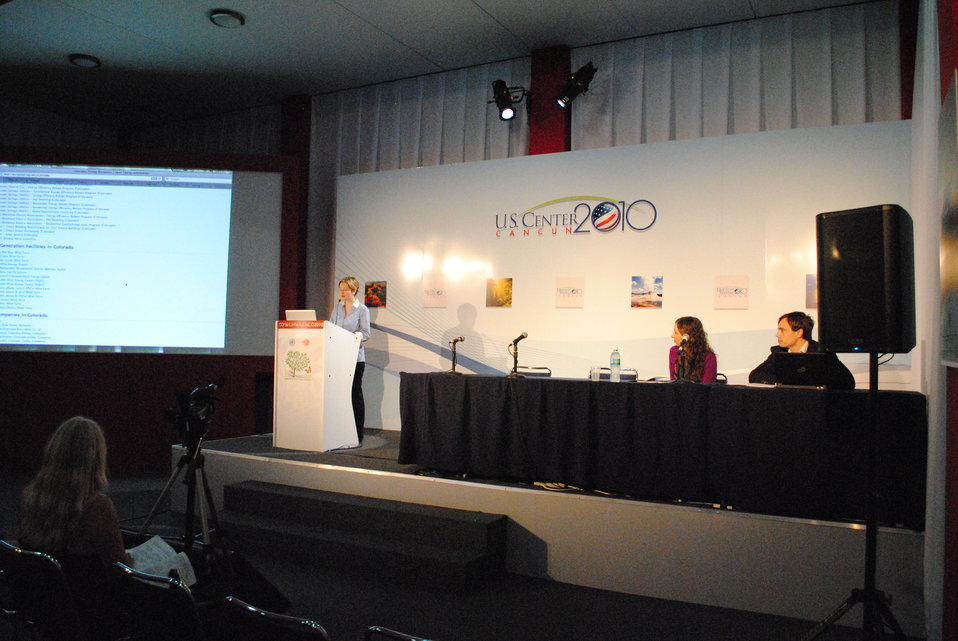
Jacqueline Cochran Showcases the Open Energy Information (OpenEI) Platform

Jacqueline Cochran of the National Renewable Energy Lab demonstrates how the U.S. government's Open Energy Information (OpenEI) platform, a side event at the U.S. Center at COP-16 in Cancun, Mexico, on December 1, 2010.